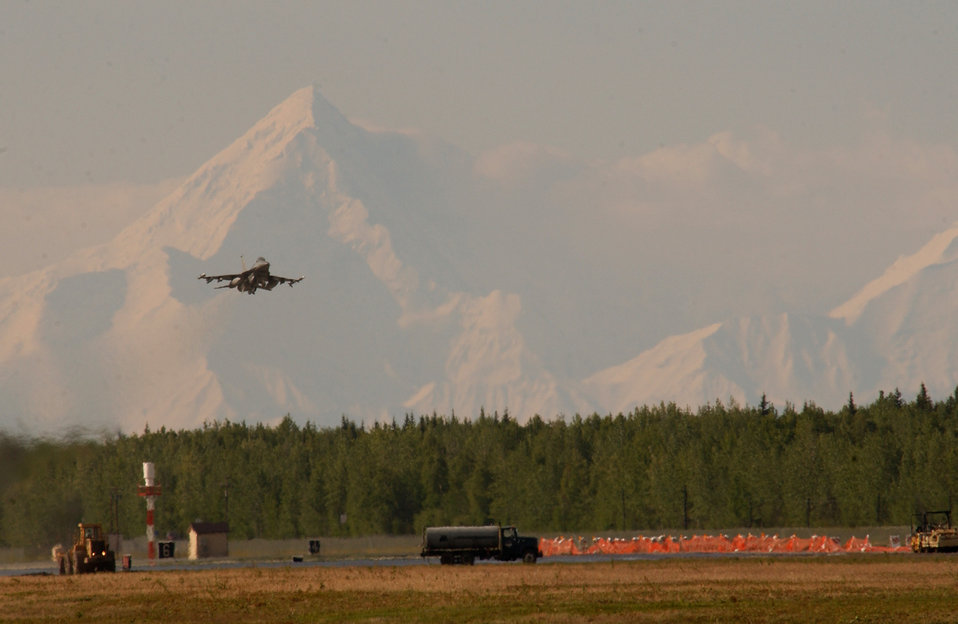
Northern Edge aims for air, sea dominance

An F-16 Fighting Falcon from the 18th Fighter Squadron at Eielson Air Force Base, Alaska, takes off on Tuesday, June 6, 2006, during exercise Northern Edge 2006. The joint training exercise hosted by Alaskan Command is one of a series of U.S. Pacific Command exercises that prepare joint forces to respond to crises in the Asian Pacific region.